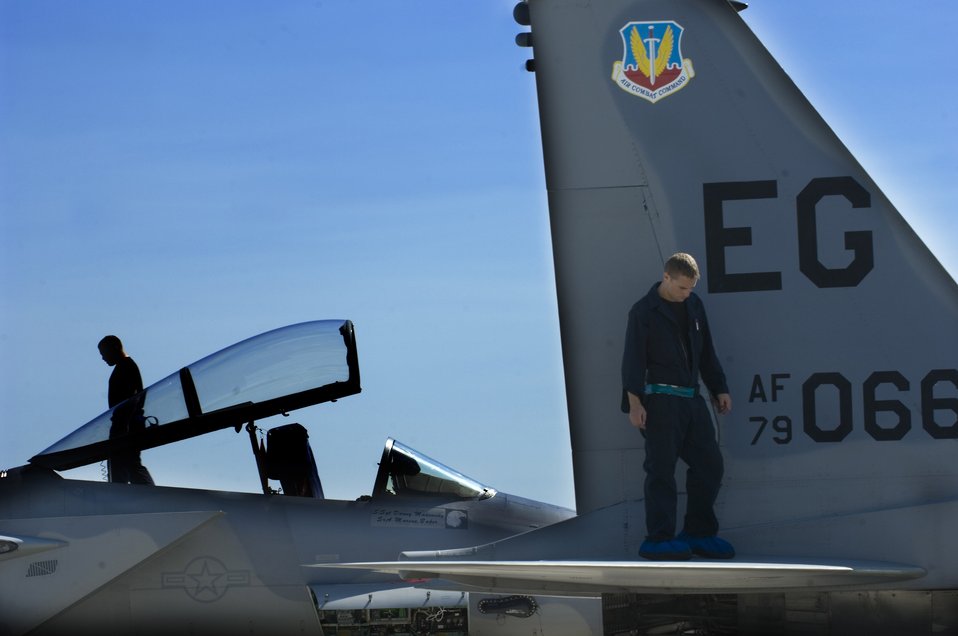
Maple Flag Exercise

33rd Aircraft Maintenance Squadron maintainers from Eglin Air Force Base, Fla., perform post-flight inspections during a Maple Flag exercise. Maple Flag 41 is a four-week international air combat exercise held annually at 4 Wing Cold Lake, Alberta, Canada. The exercise provides Canadian and allied aircrew with realistic training in a modern simulated air combat environment, and it emphasizes air operations involving large package coalition forces.